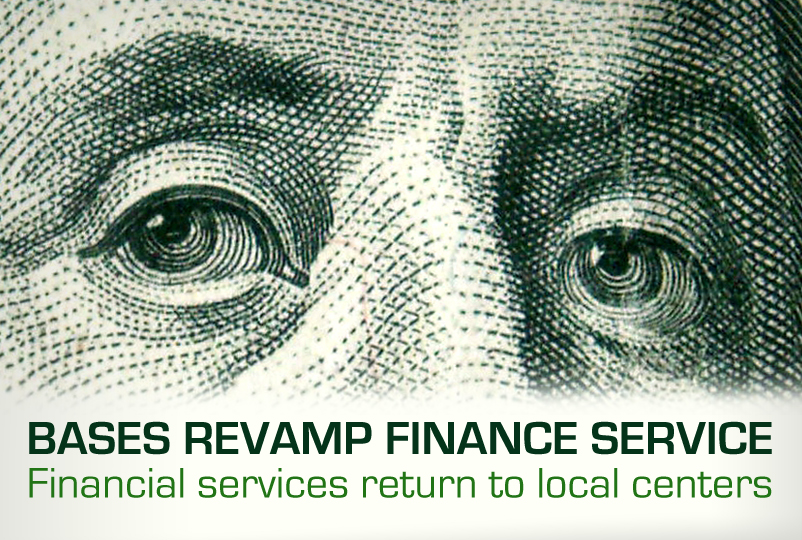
Bases revamp finance service